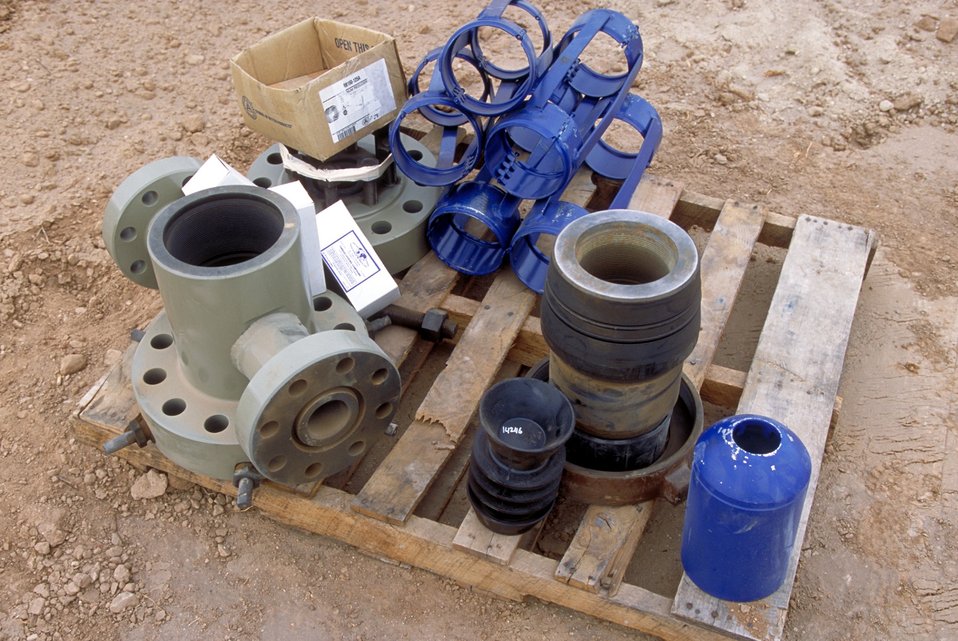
Drilling for coal bed methane near Price, Utah.